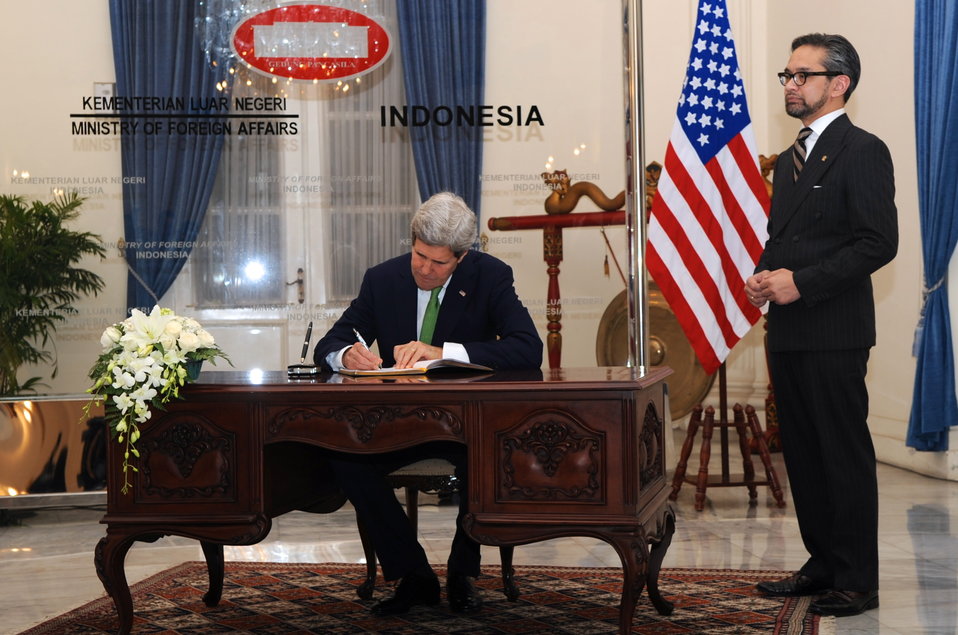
Secretary Kerry Signs Guest Book at Indonesian Ministry of Foreign Affairs

U.S. Secretary of State John Kerry, joined by Indonesia Foreign Minister Marty Natalegawa, signs a guest book upon arriving at the Ministry of Foreign Affairs for a U.S.-Indonesia Joint Commission Meeting in Jakarta, Indonesia on February 17, 2014.